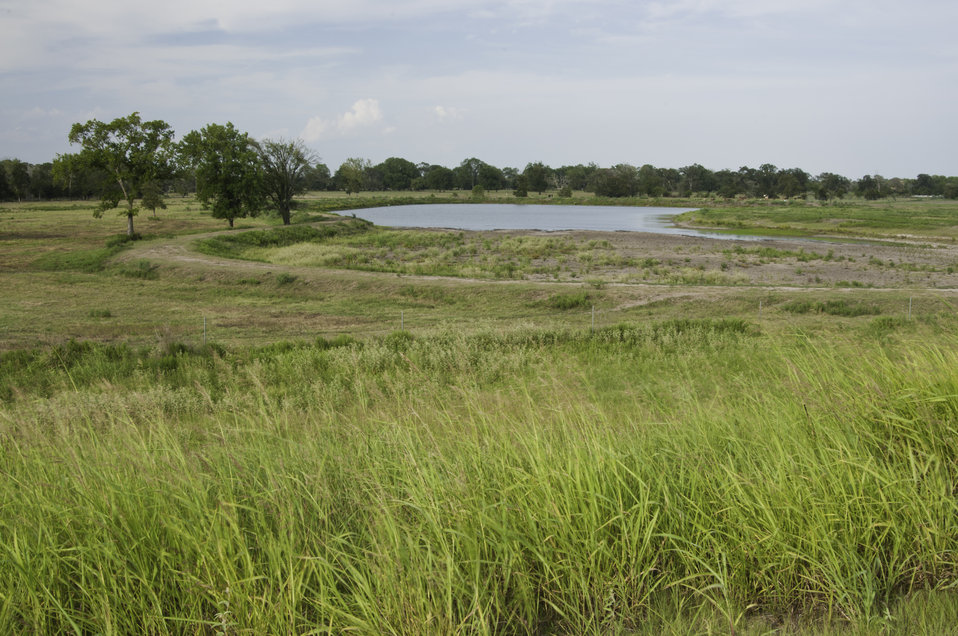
Drought Affect on Tank used to water livestock near Navasota, TX on Aug. 23, 2013.